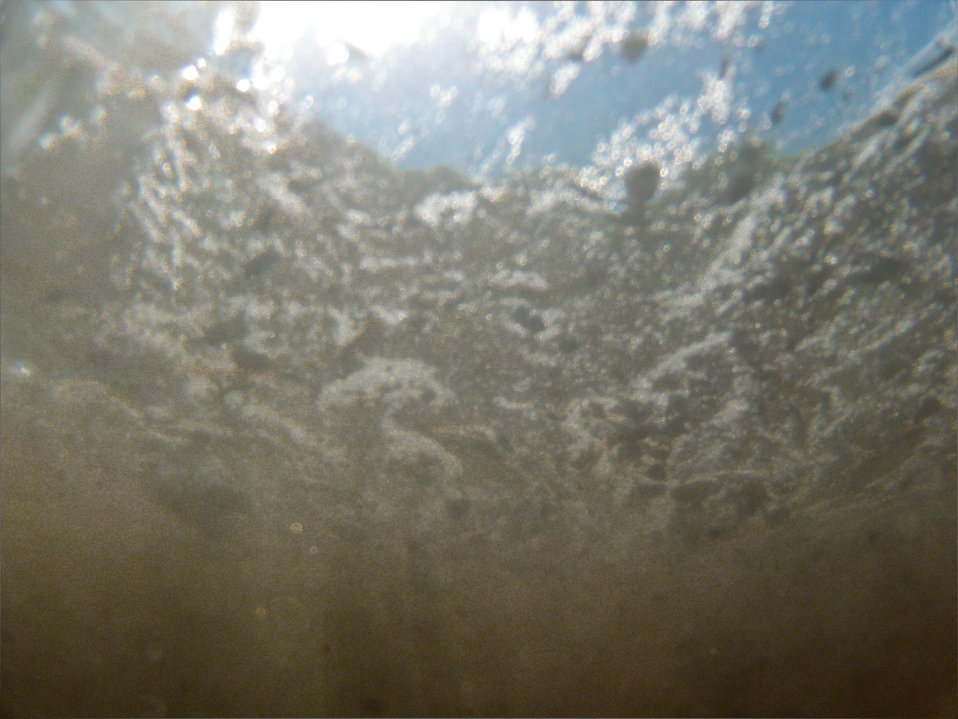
Underwater view of what would normally be clear mountain waters at a confluence of two tributaries, the Cache la Poudre and the North Fork of the Cache la Poudre, near Seaman Reservoir, 60 miles north of Denver, Colorado on Friday, July 20, 2012. Because of the Hewlett Gulch Fire (May 14, 2012), in the Poudre Canyon area clear water has been transformed to nearly black water, heavily laden with ash, silt, and burnt debris washed down mountainsides by thunderstorms. At its peak more than 400 firefighters were battling fires pushed by 50 mph winds. When the last embers were cooled, more than 12-square miles lay blacked at a cost of approximately 3.2 million dollars. The aerial distribution of straw has successfully kept nearby Seaman Reservoir clean for the drinking water of the City of Greeley. Forest Service lands receive straw, while private and other lands receive a seed mix and straw to promote ground cover plant growth on ash-covered lands. In total, 1,800 tons of straw will be applied during the 14-day operation. One quarter of the cost was paid by the City of Greeley and the U.S. Department of Agriculture funded the remainder.